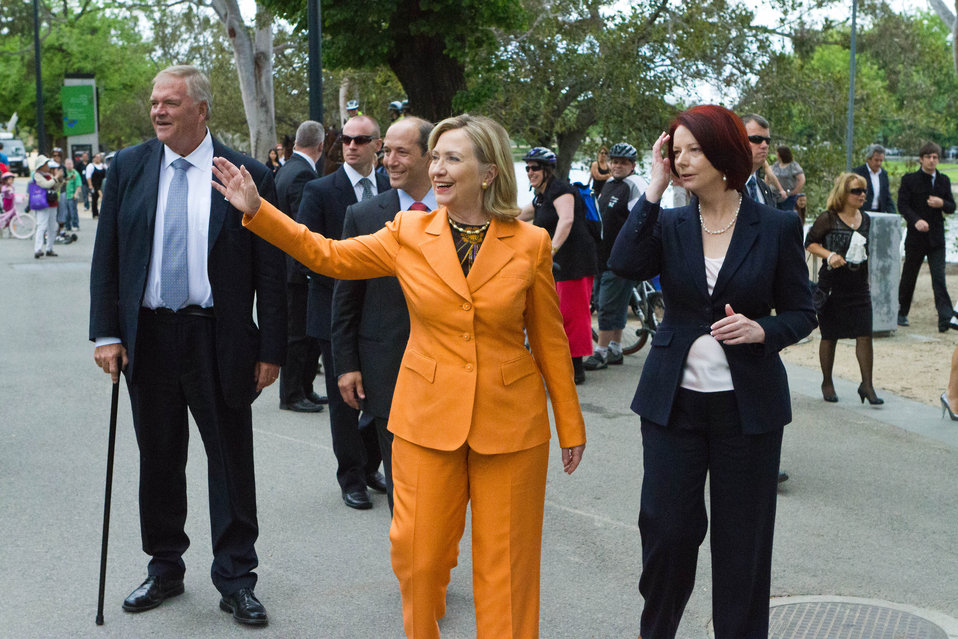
Secretary Clinton Greets Australians Along the Yarra River

U.S. Secretary of State Hillary Rodham Clinton waves to the crowd during her walk with Australian Prime Minister Julia Gillard, right, Australian Ambassador to the U.S. Kim Beazley, left, and U.S. Ambassador to Australia Jeff Bleich, directly behind the Secretary, in Melbourne, Australia, on November 7, 2010.